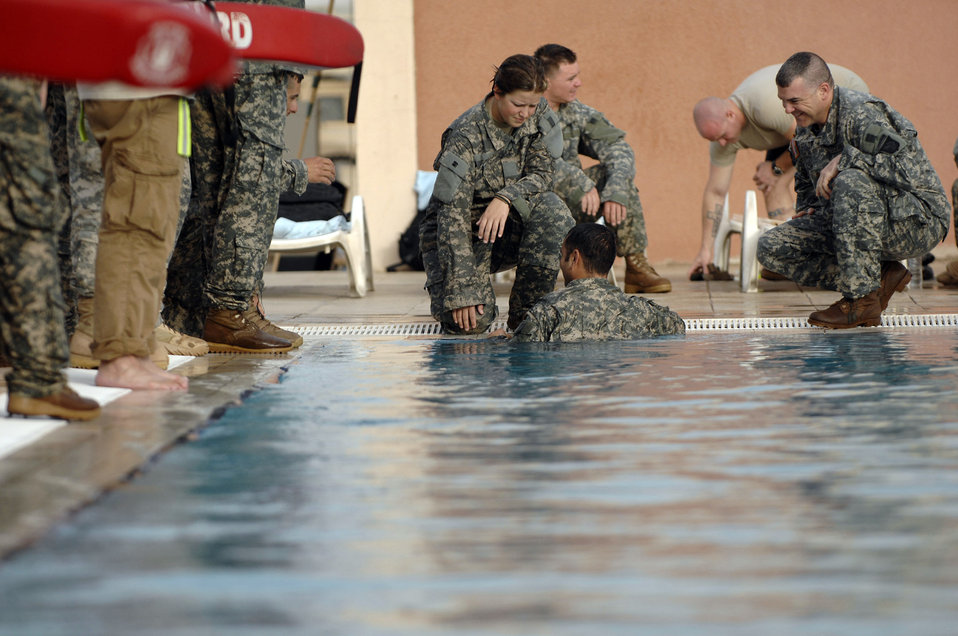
All Wet

JOINT BASE BALAD, Iraq (AFPN) -- Soldiers from Bravo Company 2nd Battalion, 320th Field Artillery Regiment, and Airmen from the 332nd Air Expeditionary Wing conduct water skills training here July 8. The training, consisting of a 25-meter swim in full uniform and five minutes of treading water, is designed to make sure the Soldiers and Airmen can function in the water and that they will be able to respond and react during operations in varying watery terrains.